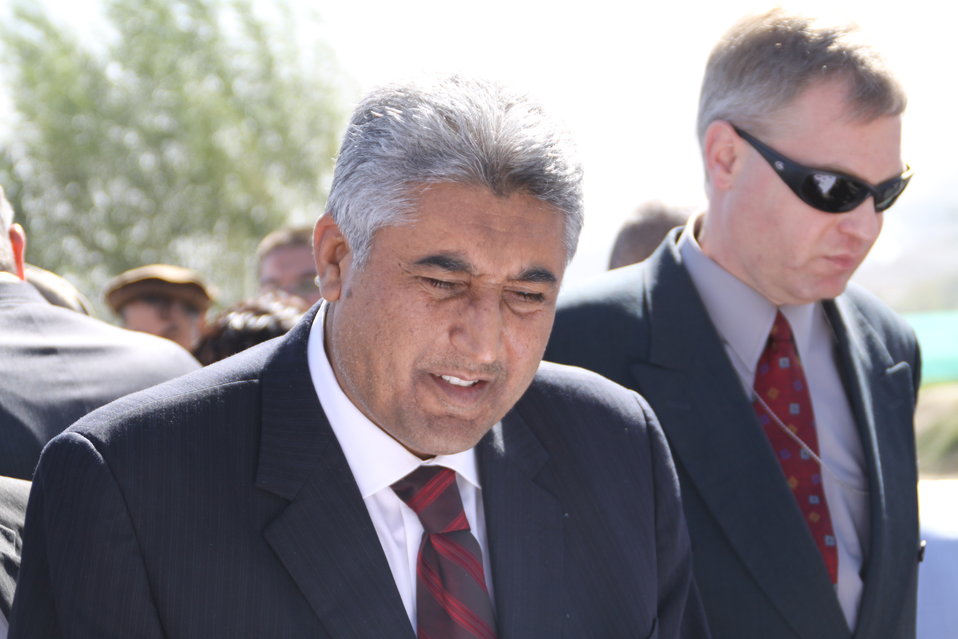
AVIPA Plus Wheat Seed Distribution 101005

US Ambassador Karl Eikenberry and USAID Acting Mission Director Kevin Brownawell joined the Minister of Agriculture, Irrigation and Livestock, H.E. Minister Mohammed Rahimi in signing a Memorandum of Understanding and distributing vouchers to area farmers for wheat and fertilizer.

US Ambassador Karl Eikenberry and USAID Acting Mission Director Kevin Brownawell joined the Minister of Agriculture, Irrigation and Livestock, H.E. Minister Mohammed Rahimi in signing a Memorandum of Understanding and distributing vouchers to area farmers for wheat and fertilizer.